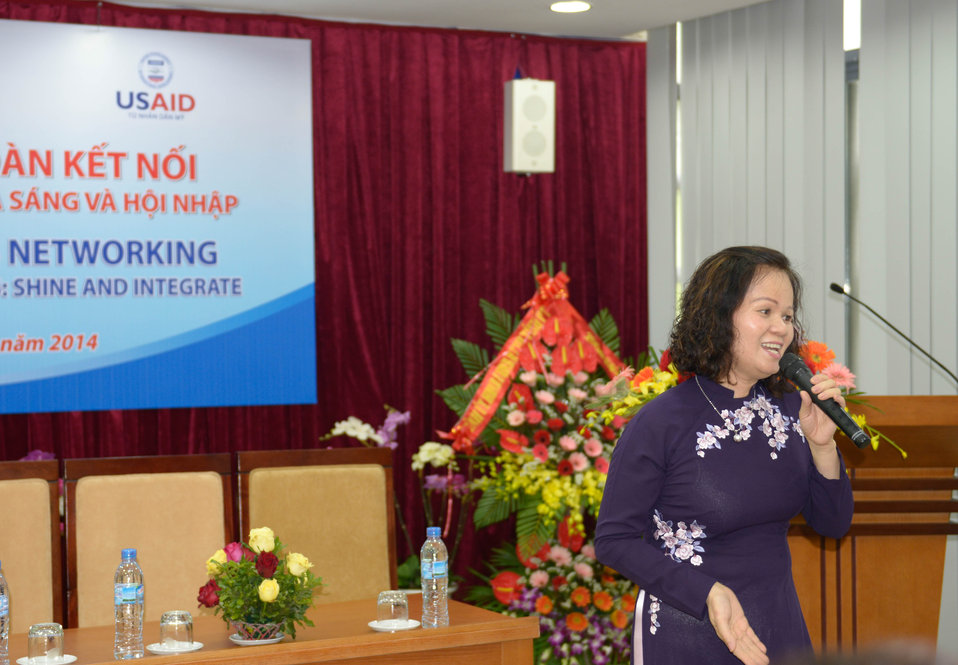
International Women's Day Seminar for female entrepreneurs

Phu Tho, Vietnam. March 1, 2014.